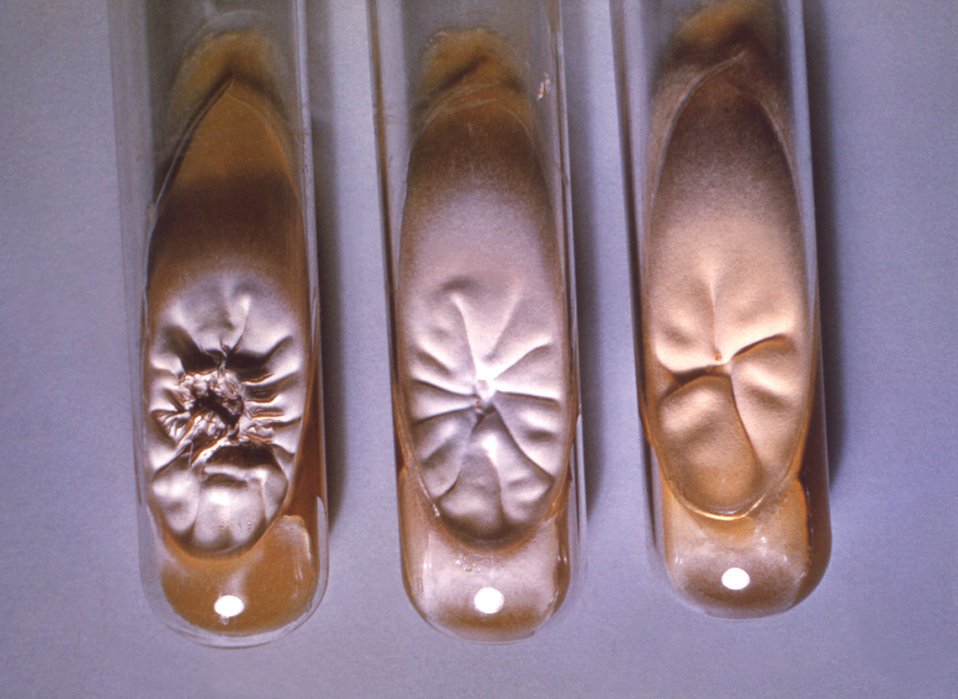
This image depicts three slant culture test tubes, all of which had been inoculated with Trichophyton tonsurans fungal organisms derived from a monospore culture. Of interest, were the differences in colonial morphology from one culture to the next, though the experimental circumstances were identical for both tubes.